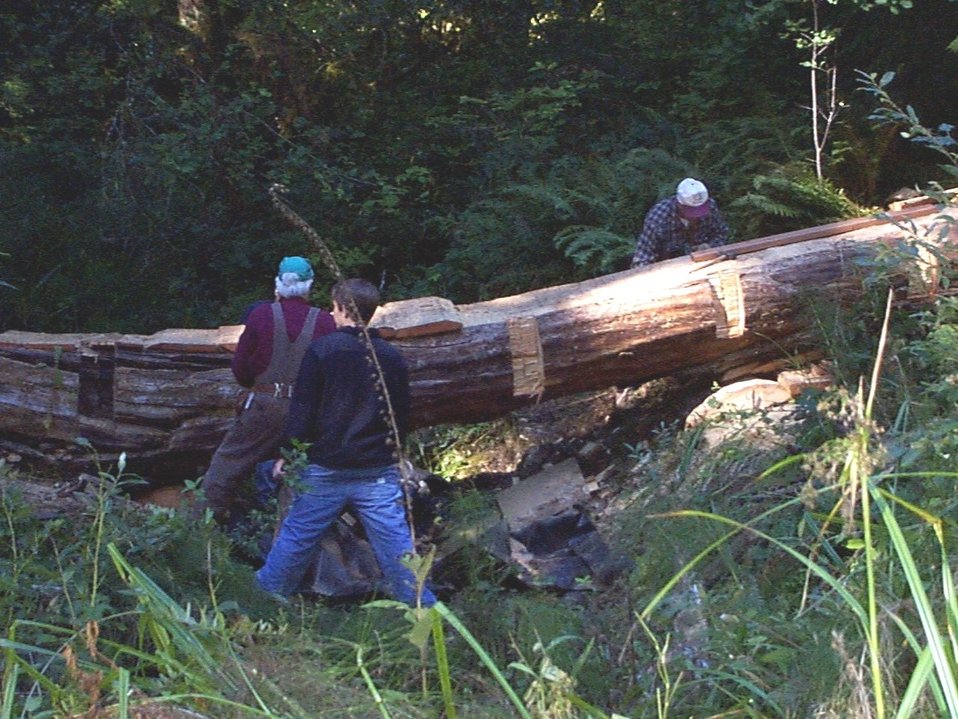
Boy Scouts install hand rail on the foot bridge at McGowen Creek.